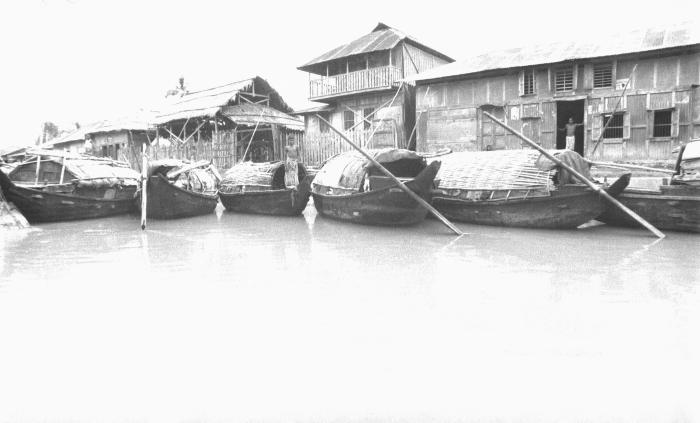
This image depicted a number Bangladesh country boats that are docked alongside processing establishments. This image was part of a series provided by Dr. Stan Foster, and captured by Pierre Claquin, M.D., B.A.C., who at the time was a member of the World Health Organization's Smallpox Eradication Program. It was part of a series photographed by former E.I.S. officer, Stanley O. Foster M.D., M.P.H., and was one of a series entitled 'The Story of One Smallpox Jeep', which depicted the travails faced by the jeep, and its occupants of public health practitioners, as they road through the Bangladesh countryside in an attempt to eradicate smallpox from the country. Much of the Bangladesh culture is based on riverine activities such as fishing and transport.